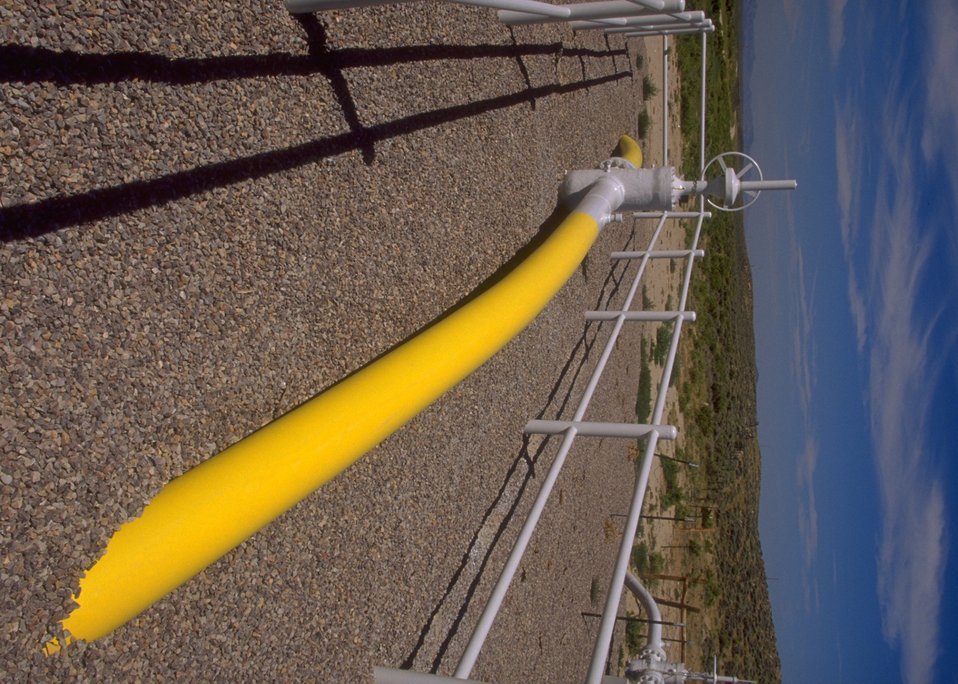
Natural gas pipeline along the Oregon Trail west of Casper, Casper Field Office.